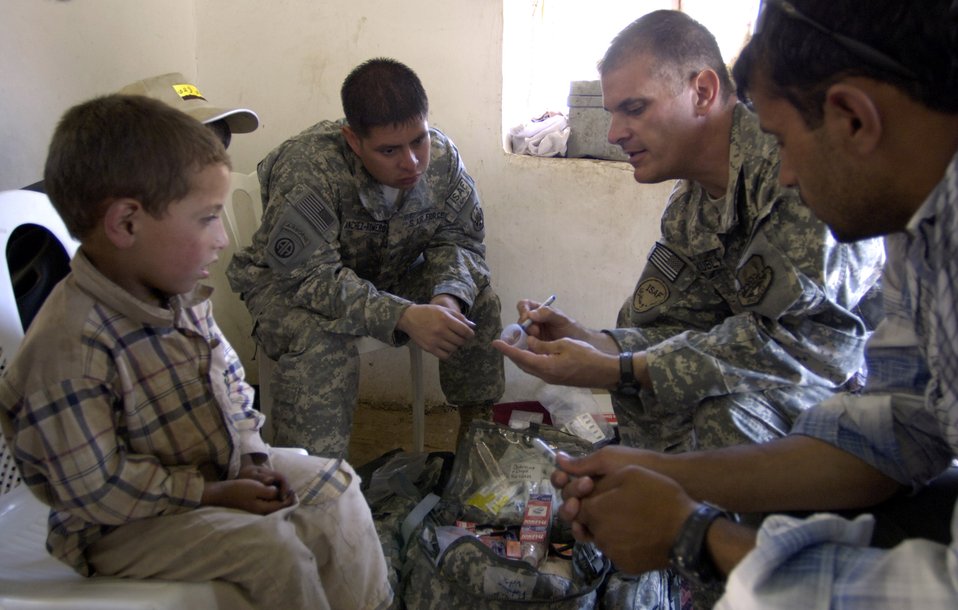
Airmen trek over mountains to deliver aid in Afghanistan

Panjshir Provincial Reconstruction Team members Capt. Kevin Kubly (second from right) and Staff Sgt. Andre Sanchez-Romero explain medication dosage through an interpreter to a village boy and his father (out of the picture) Aug. 7 in Roydara village in the Shutol district of Panjshir province, Afghanistan. Captain Kubly is a physician's assistant deployed from the 3rd Medical Group at Elmendorf Air Force Base, Alaska. Sergeant Sanchez-Romero is a security forces member deployed from Minot AFB, N.D. They and their fellow PRT members made an 11-mile round-trip trek over a mountain pass and into a river valley to provide medical care to Afghans living in Roydara.